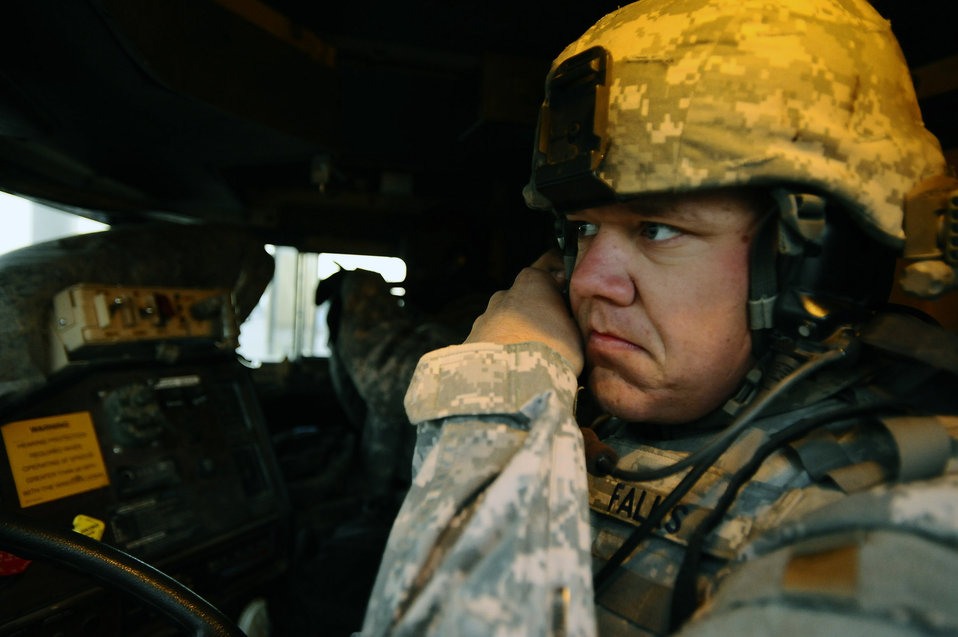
Air Force engineers answer the call from Soldiers in Iraq

Staff Sgt. Jonathan Falks dons his helmet inside an armored truck Dec. 11 at Joint Base Balad, Iraq. Sergeant Falks and other Airmen with the 732nd Expeditionary Civil Engineer Squadron Det. 6 undertake outside-the-wire construction projects for the Army. Sergeant Falks, a 732nd ECES Det. 6 heavy equipment operator and native of Gonzales, Texas, is deployed from Hickam Air Force Base, Hawaii.